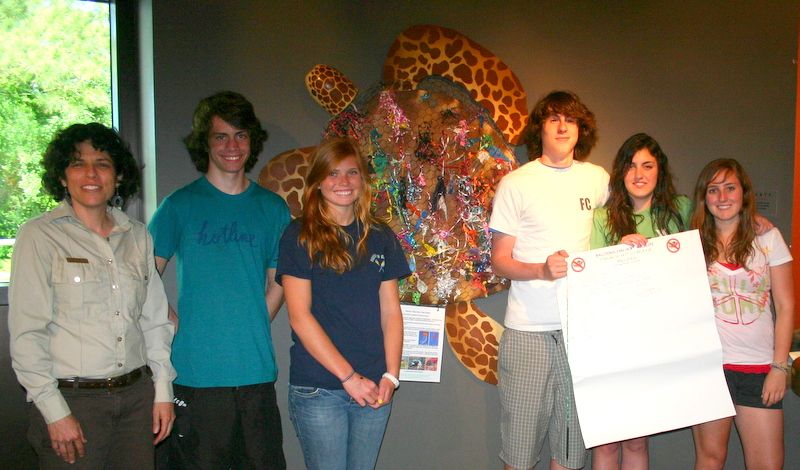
trash talking turtle